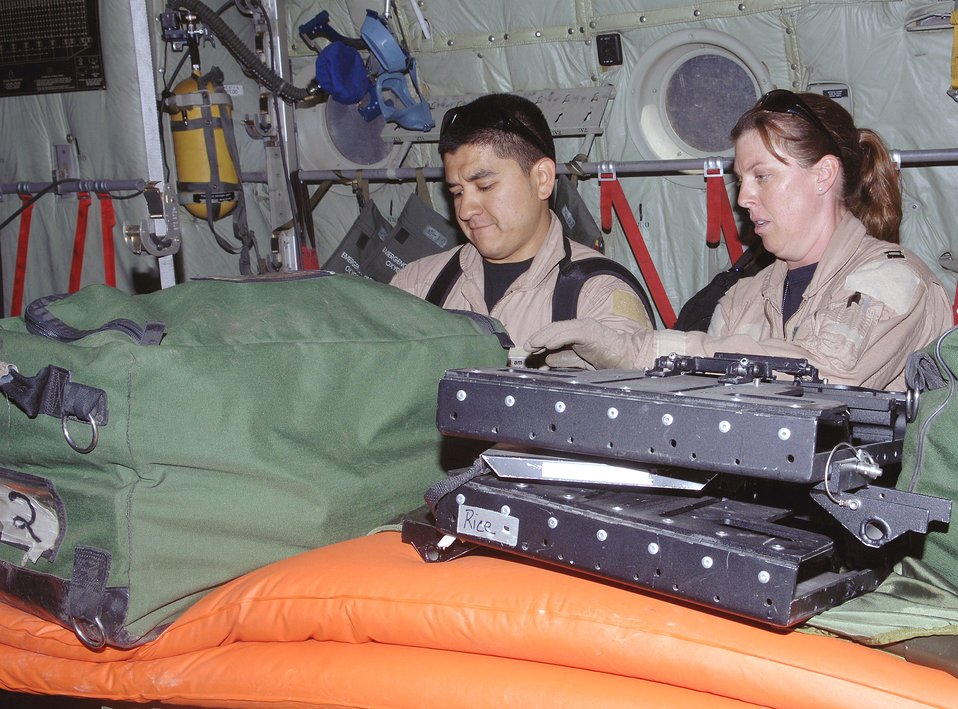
Saving servicemembers' lives one flight at a time

Senior Airman Roy Aguilar and Capt. Jenna Jamison inventory and prep their equipment aboard a C-130 Hercules at Bagram Air Base, Afghanistan, prior to an aeromedical evacuation mission. Airman Aguilar is a respiratory therapist and Captain Jamison is an intensive care nurse. They are deployed from Wilford Hall Medical Center, Lackland Air Force Base, Texas.